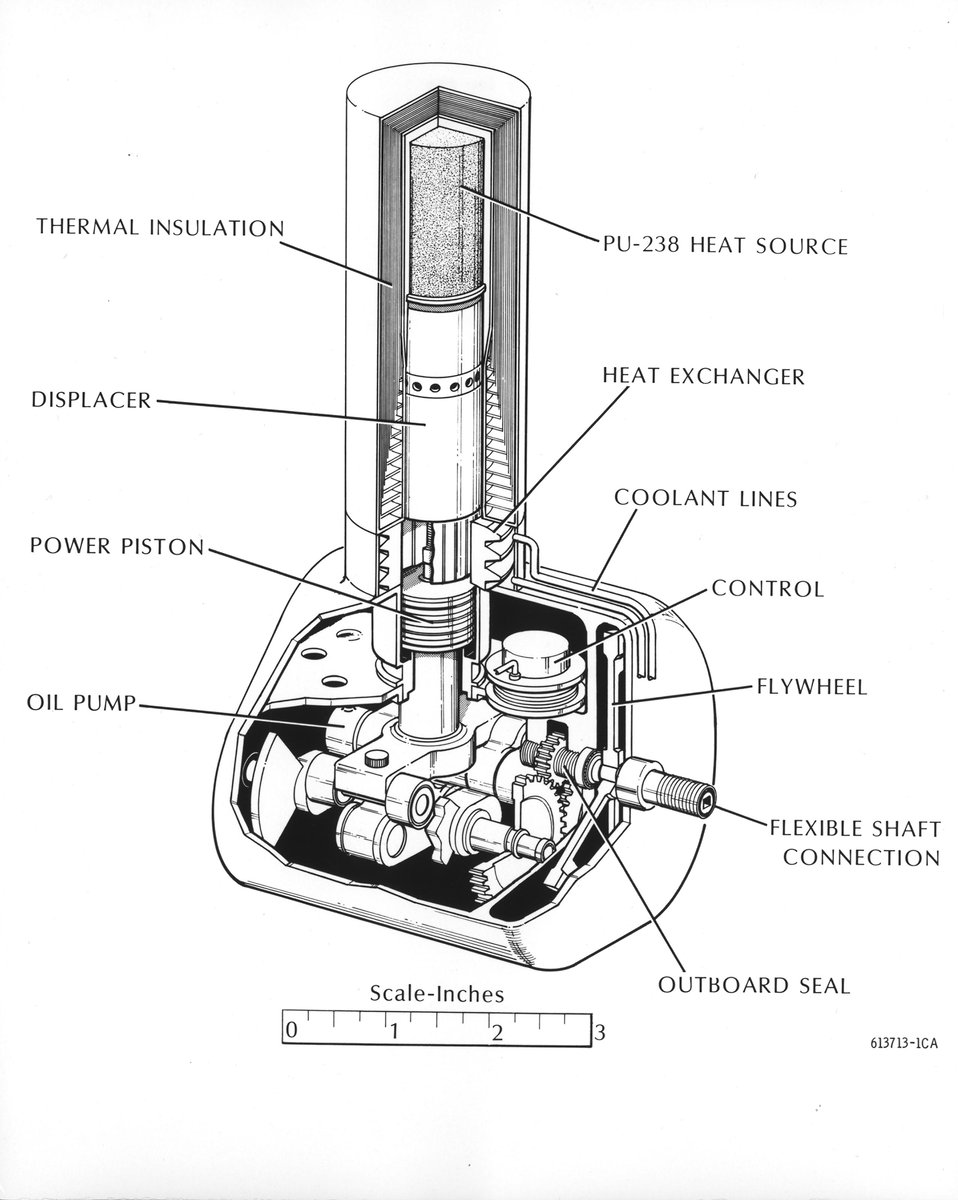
The thermal converter for the artificial heart being assessed by the Atomic Energy Commission will weigh about 4.4 pounds and have a volume of less than 1.7 pints. Circa 1973.